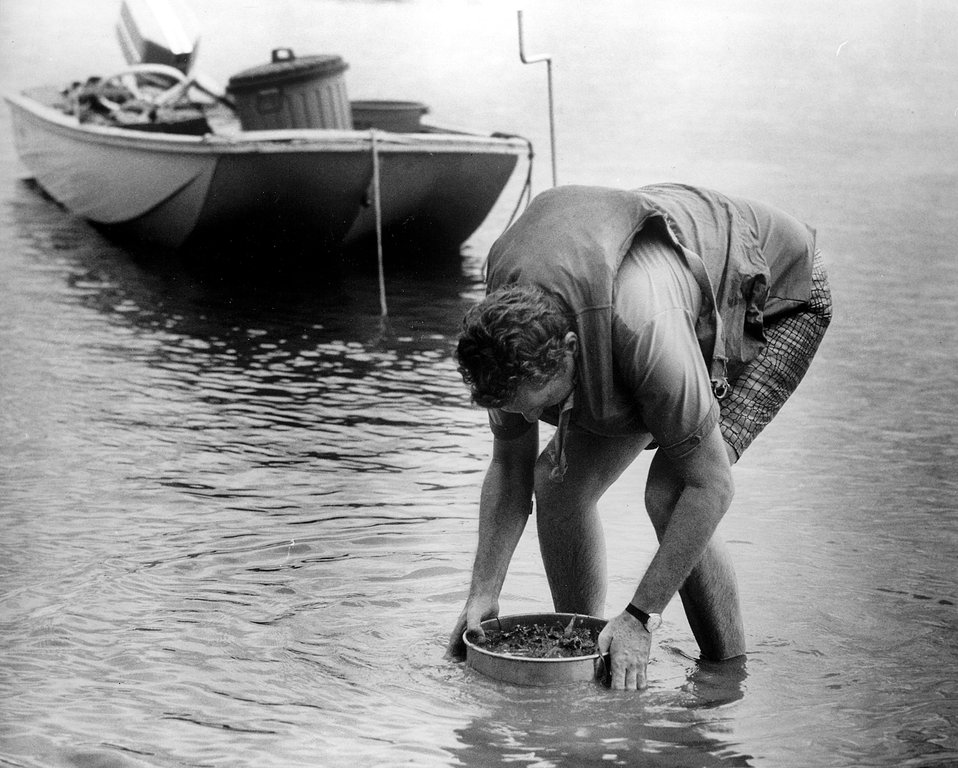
Researchers of the U.S. Atomic Energy Commission's Puerto Rico Nuclear Center obtain bottom samples from a turtle grass bed. Circa 1972.